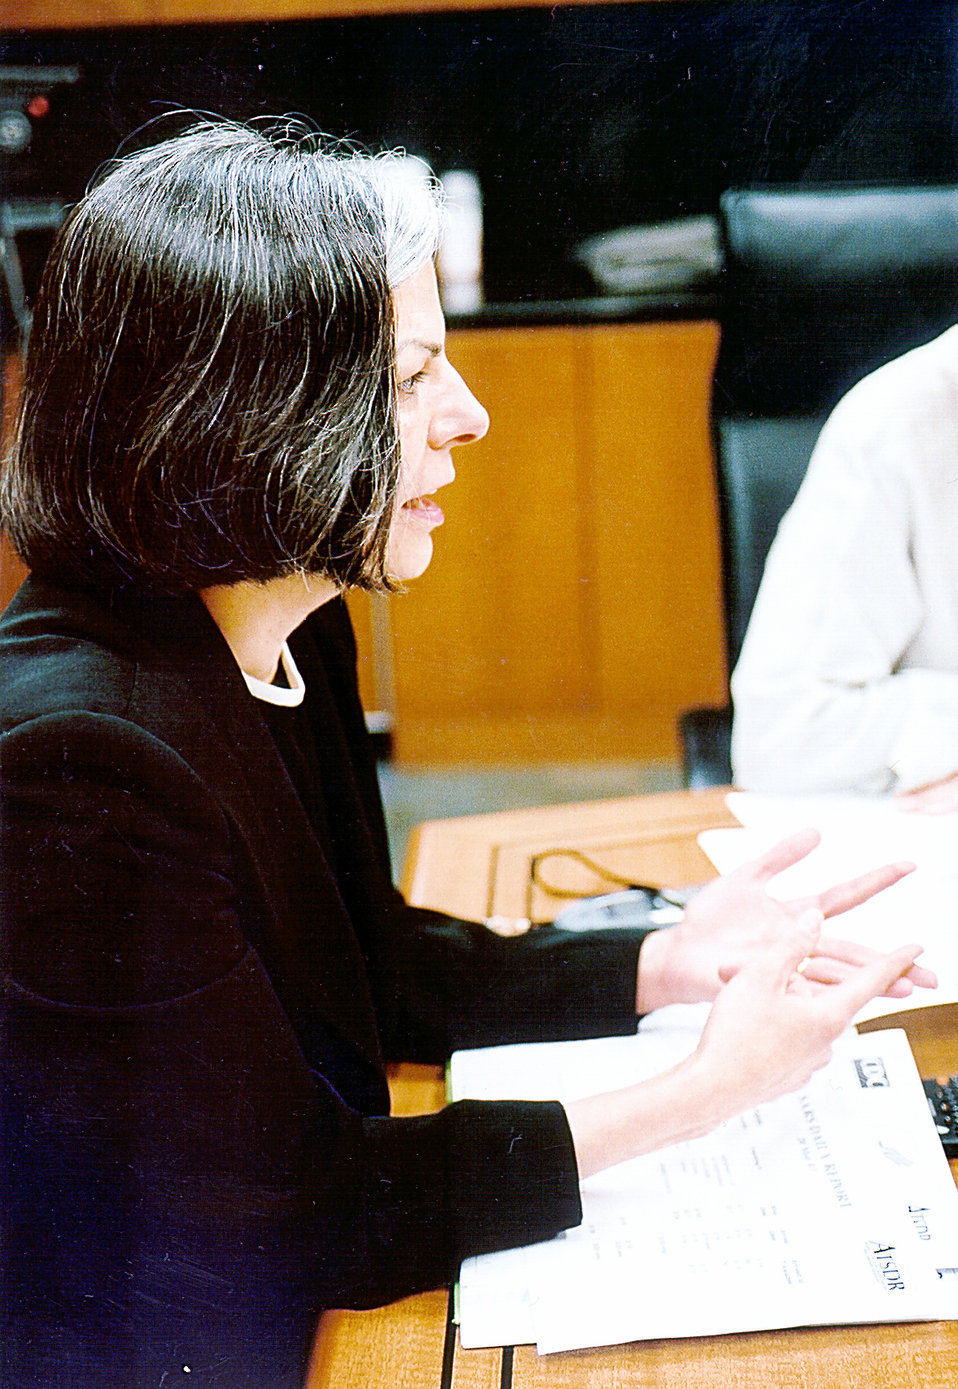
This is a photograph of Julie Louise Gerberding, MD, MPH, former Director (2002 - 2008), CDC/ATSDR, seen inside the CDC's new Emergency Operations Center.